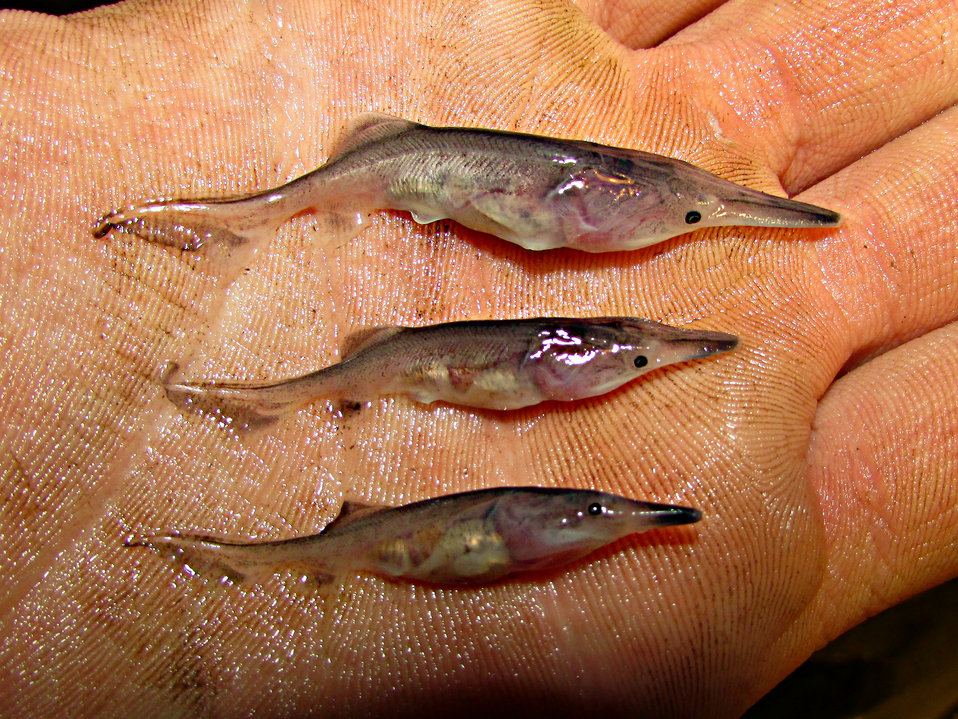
Sizes at 30 Days Old

Here are the size differences at 30 days old.